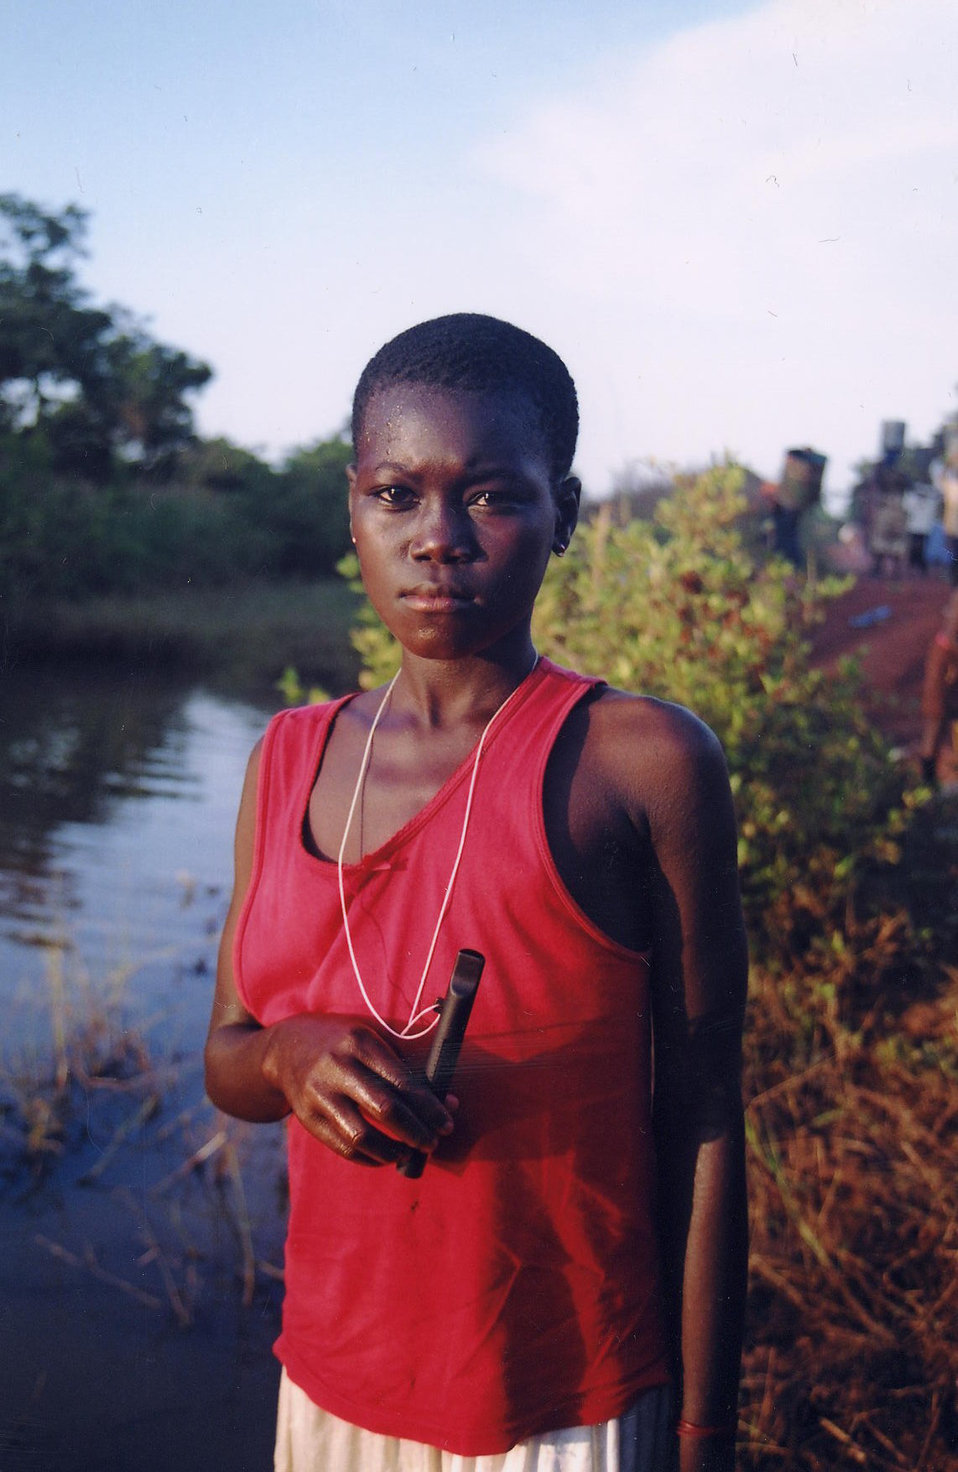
This photograph depicts a young Ghanaian woman holding a pipe filter that she wears draped on a cord about her neck. Pipe filters are individual filtration devices, similar to a straw, which allow people to filter their water to avoid contracting Guinea worm disease (GWD) while traveling or working in the field. Persons become infected by drinking water containing copepods (water fleas) harboring the infective stage larvae of Dracunculus medinensis. Once inside the body, the stomach acid digests the water flea, but not the larvae, which find their way to the small intestine, where they penetrate the wall of the intestine and pass into the body cavity. During the next 10 - 14 months, the Guinea worms mature to a full size adult 60 - 100cm (2 - 3ft) long, and as wide as a cooked spaghetti noodle. Adult worms mate inside the abdomen. After which, the male dies and the female worm migrates to the site where she will emerge, usually from lower limbs.